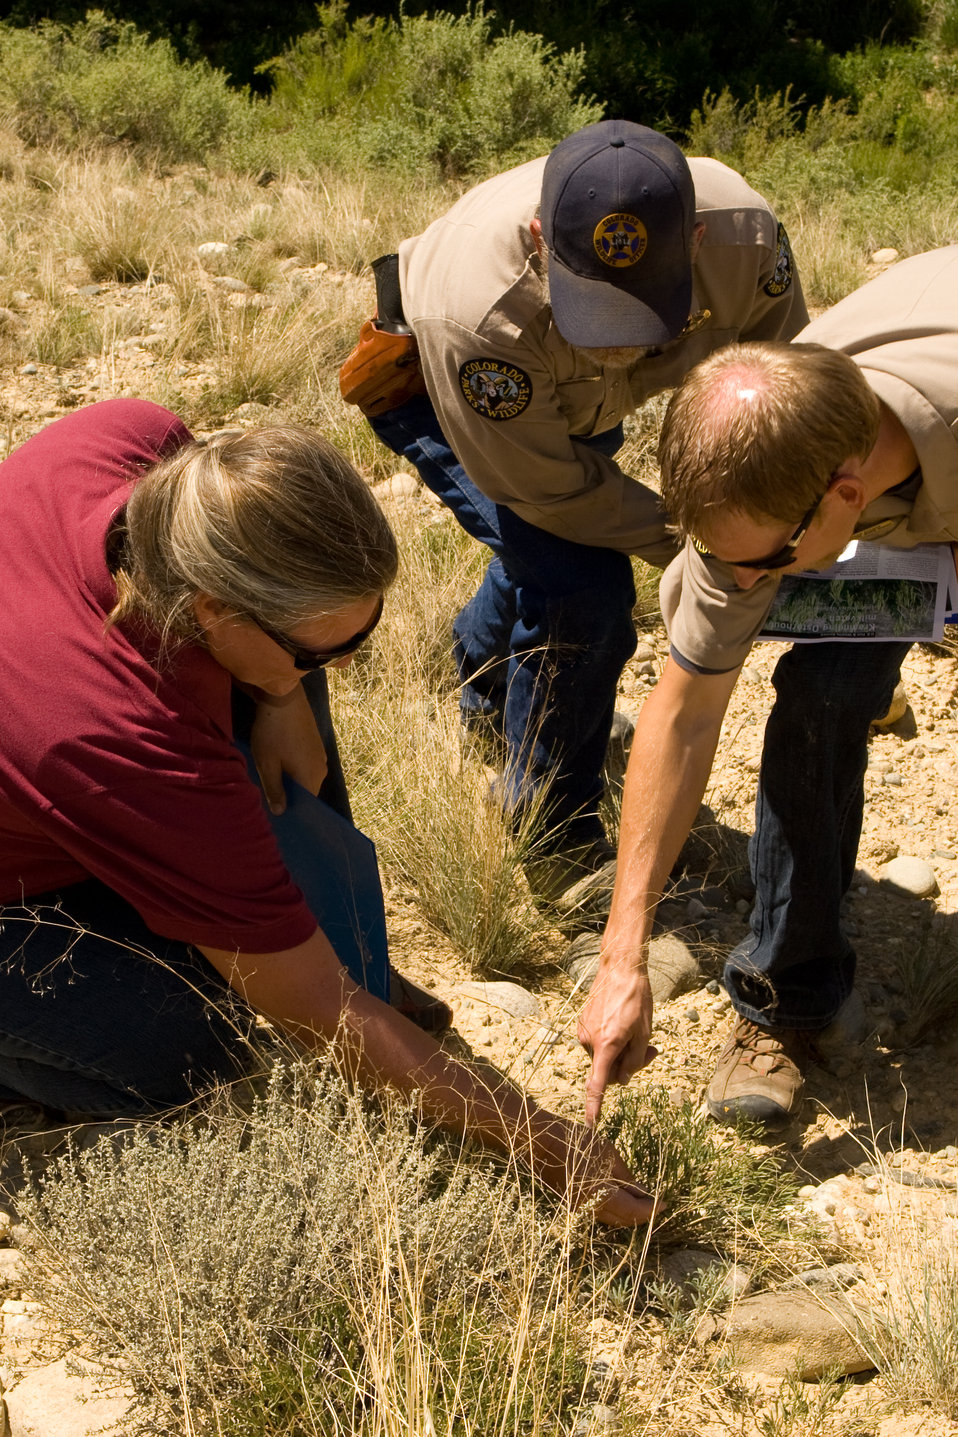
Colorado Rare Plant Conservation Initiative

The Colorado Rare Plant Conservation Initiative (RPCI) is a partnership of 23 statewide and regional agencies, private organizations, and academic institutions working to conserve 121 rare plants in Colorado. As part of these efforts the group developed the Colorado Rare Plant Conservation Strategy, developed Best Management Practices to reduce energy development impacts, addressed climate change, and developed focused strategies for the conservation of individual species at eight priority landscapes. The group has also worked to coordinate volunteer efforts for plant conservation across the state.